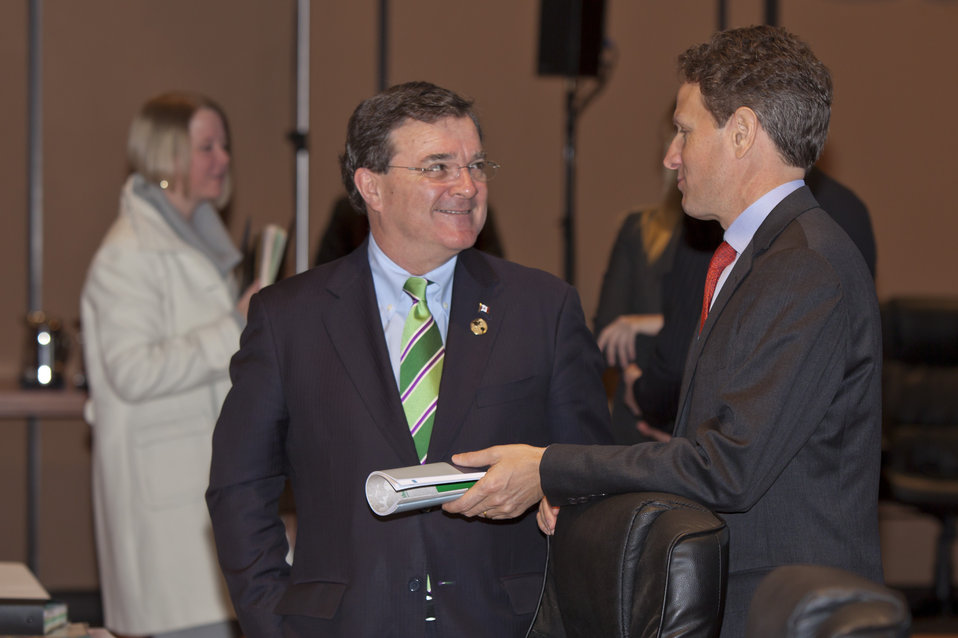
Meeting of Finance Ministers in Calgary

Canadian Finance Minister James Flaherty and US Treasury Secretary Tim Geithner at the meeting of finance ministers of the Americas and the Caribbean in Calgary, Canada.